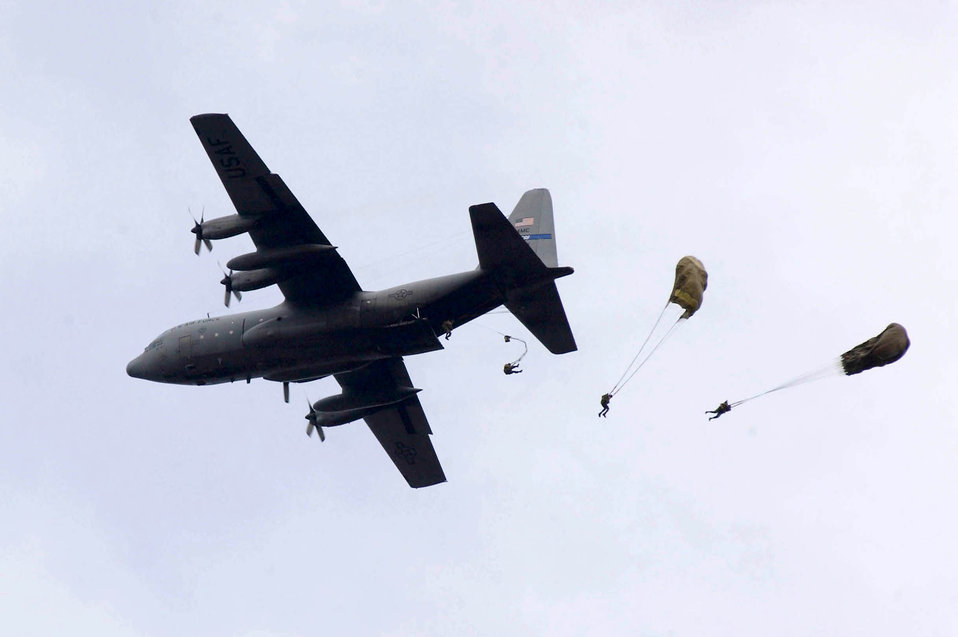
Air drop

BISHKEK, Kyrgyzstan -- A C-130 Hercules drops U.S. Army and Kyrgyz National Guard troops over a drop zone at Frunze Field, outside Bishkek, the captial of Kyrgyzstan Sunday. The 777th Expeditionary Airlift Squadron and members of the 376th Air Expeditionary Wing provided support to the joint exercise